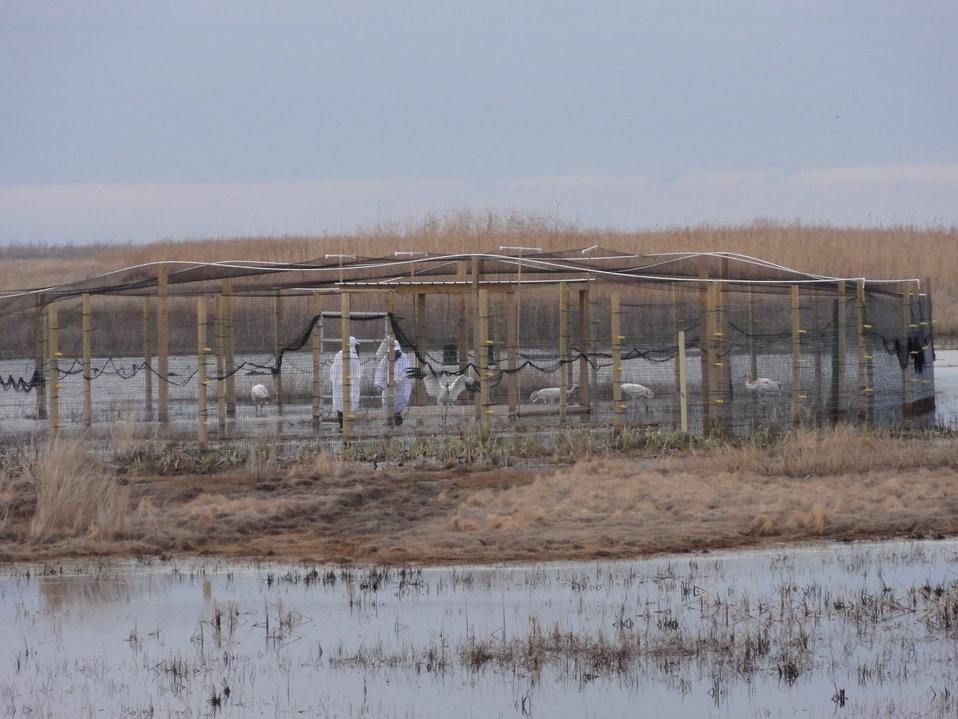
Whooping Crane Reintroduction Pen

Another view of the top-netted pen with costumed humans interacting with the cranes.